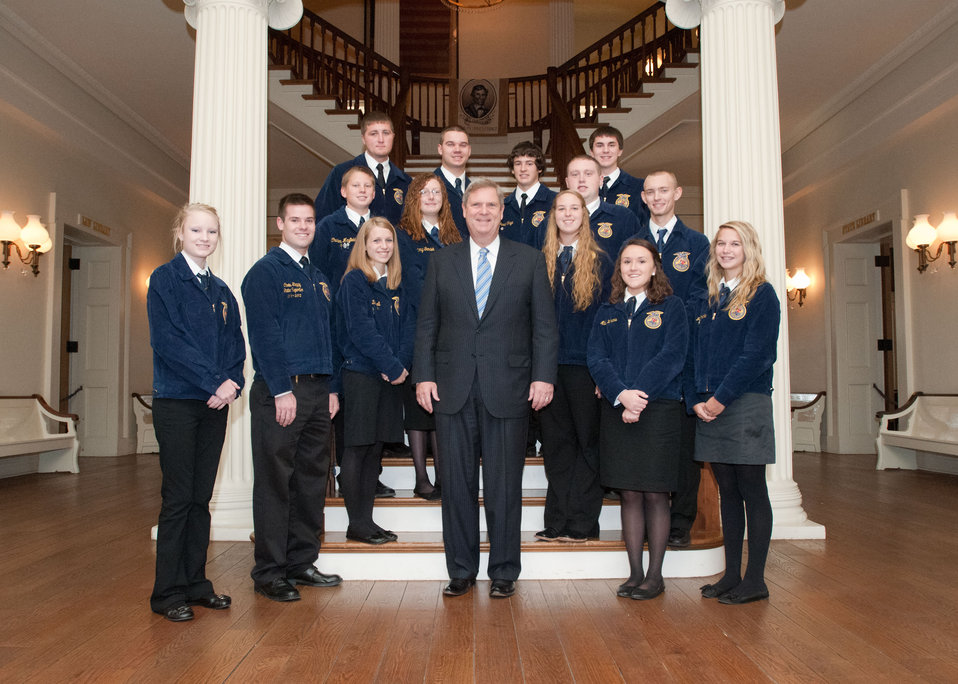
Agriculture Secretary Tom Vilsack (center) spent a few moments with Illinois Future Farmers of America (FFA) before unveiling the new graphic to commemorate the 150th Anniversary of U.S. Department of Agriculture in the hometown of its founder President Abraham Lincoln. The event took place at the Old State Capitol in Springfield, IL, on Wednesday, November 2, 2011.